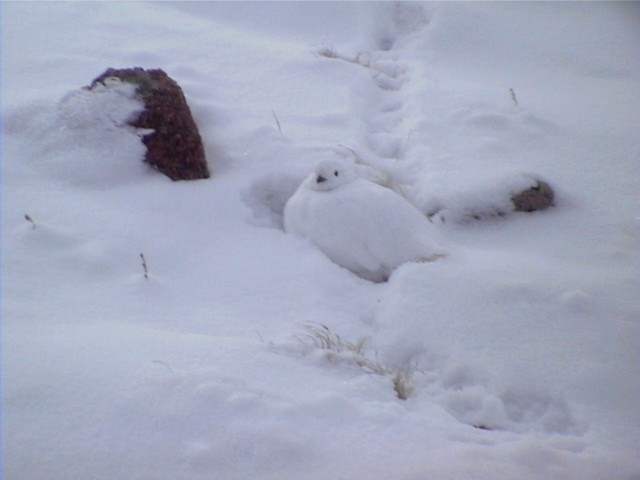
White-tailed Ptarmigan in Snow

Male and female white-tailed ptarmigan share similar body size, shape, and winter plumage, with adult body lengths up to 13.4 inches (34 centimeters) and body masses up to 0.9 pound (425 grams). Both the southern and Mt. Rainier white-tailed ptarmigan are white in winter and brown in summer, the feathers changing color with the seasons to camouflage the birds. Although the body feathers change color, the white-tailed ptarmigan is named for its perpetually white tail feathers, a morphological trait that distinguishes it from other ptarmigan species. During the winter, males and females are stark white and difficult to distinguish from the background of snow. In the summer during the breeding season, males turn a lighter color of brown or gray than females and develop a dark band of feathers on the breast that resembles a necklace.

During the winter, the southern and Mt. Rainier white-tailed ptarmigan feed on exposed willows above the snow and dig roosts, or burrows, into the soft snow as protection from wind and weather. During the summer, the white-tailed ptarmigan feeds on willows and other alpine vegetation. White-tailed ptarmigan require cool temperatures, rocky areas, soft snow, and the presence of willows. The southern and Mt. Rainier white-tailed ptarmigan spend their entire lifecycles in alpine habitats and are well adapted to survive in the cold, arid, and open alpine environments. Adaptations of the white-tailed ptarmigan to these alpine environments include its cryptic plumage, low metabolic rates, and heavily feathered feet that act as snowshoes.